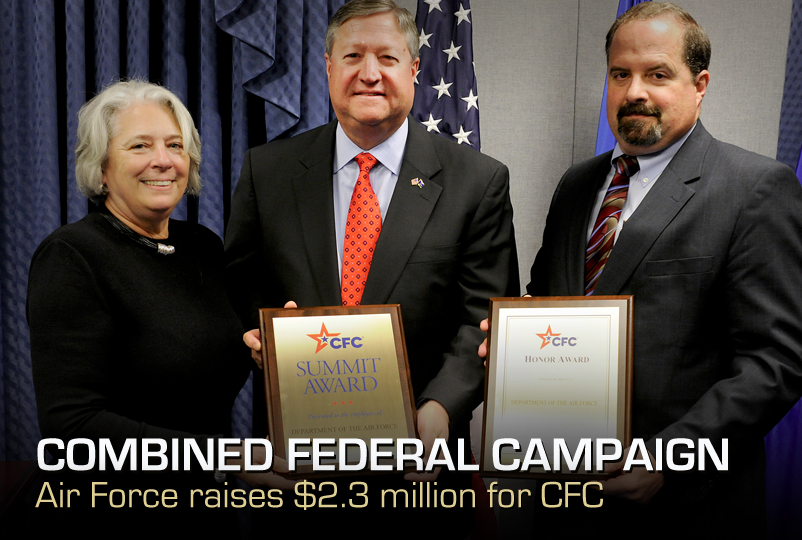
Combined Federal Campaign